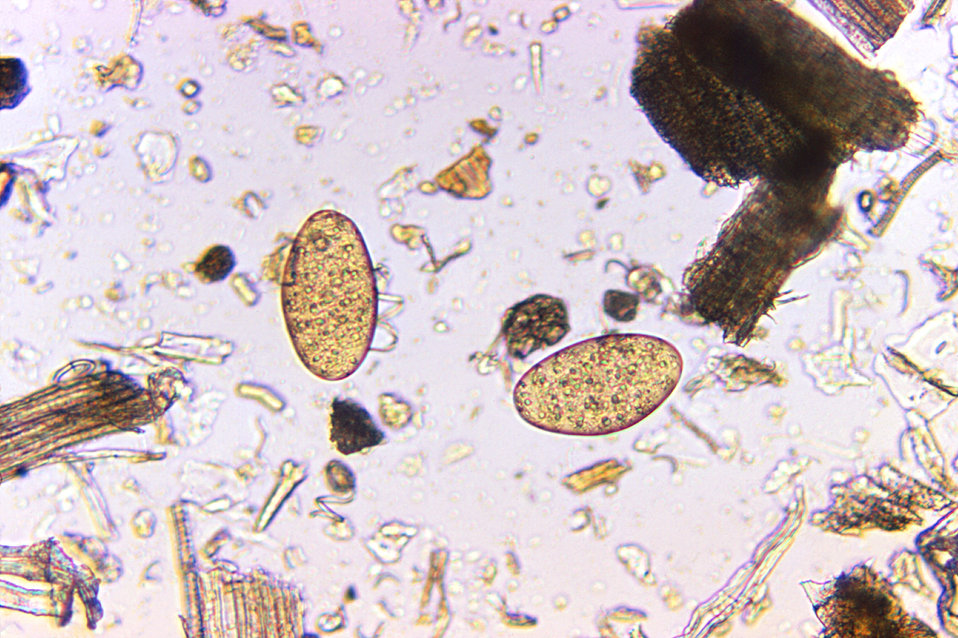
Magnified 125X, this photomicrograph revealed the presence of two Fasciolopsis buski trematode eggs that were found in an unstained formalin-preserved stool sample. F. buski are the largest intestinal flukes found parasitizing human beings. These flukes inhabit Asia and the Indian subcontinent, especially in areas where humans raise pigs, and consume freshwater plants.Clinical Features: